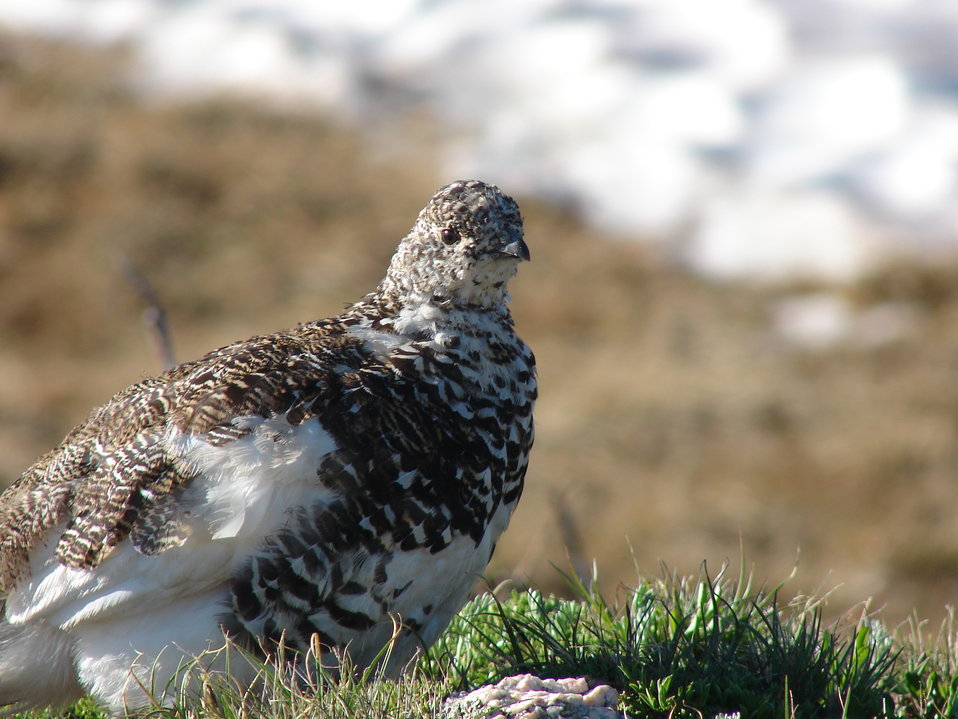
White-tailed Ptarmigan in Summer Plumage

Male and female white-tailed ptarmigan share similar body size, shape, and winter plumage, with adult body lengths up to 13.4 inches (34 centimeters) and body masses up to 0.9 pound (425 grams). Both the southern and Mt. Rainier white-tailed ptarmigan are white in winter and brown in summer, the feathers changing color with the seasons to camouflage the birds. Although the body feathers change color, the white-tailed ptarmigan is named for its perpetually white tail feathers, a morphological trait that distinguishes it from other ptarmigan species. During the winter, males and females are stark white and difficult to distinguish from the background of snow. In the summer during the breeding season, males turn a lighter color of brown or gray than females and develop a dark band of feathers on the breast that resembles a necklace.

During the winter, the southern and Mt. Rainier white-tailed ptarmigan feed on exposed willows above the snow and dig roosts, or burrows, into the soft snow as protection from wind and weather. During the summer, the white-tailed ptarmigan feeds on willows and other alpine vegetation. White-tailed ptarmigan require cool temperatures, rocky areas, soft snow, and the presence of willows. The southern and Mt. Rainier white-tailed ptarmigan spend their entire lifecycles in alpine habitats and are well adapted to survive in the cold, arid, and open alpine environments. Adaptations of the white-tailed ptarmigan to these alpine environments include its cryptic plumage, low metabolic rates, and heavily feathered feet that act as snowshoes.